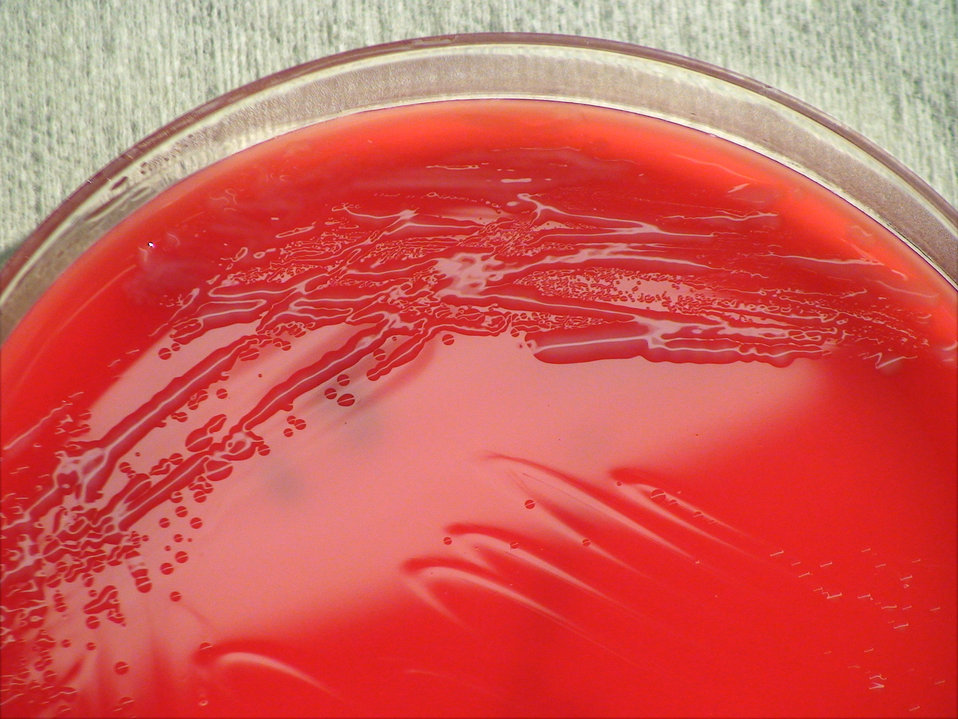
A closer view of PHIL 12385, this photograph depicts light colonial growth displayed by Gram-negative Psychrobacter phenylpyruvicus bacteria, which was grown on a medium of sheep's blood agar (SBA), for a 24 hour time period, at a temperature of 37�C.